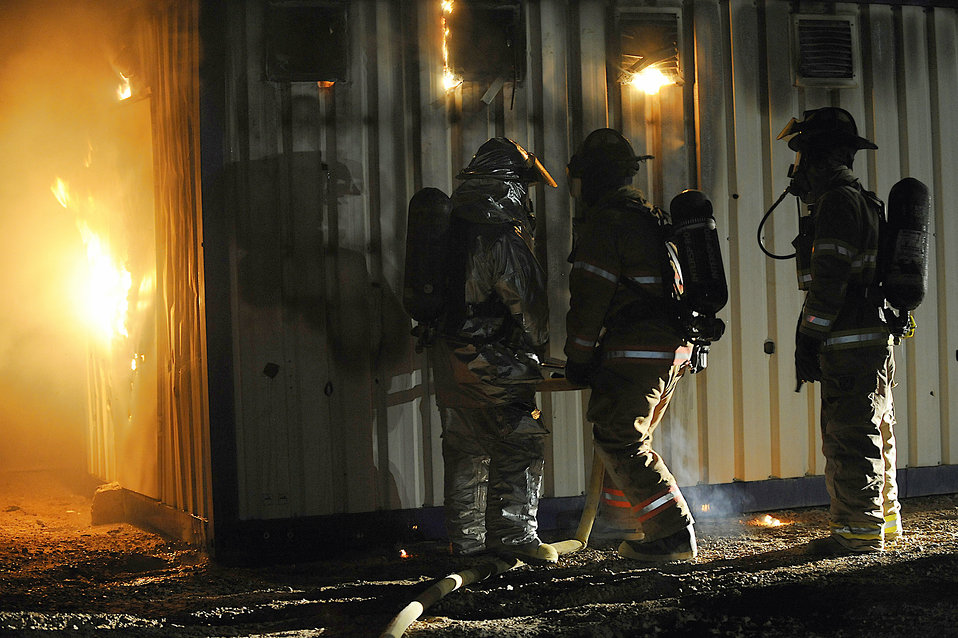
We didn't start the fire

Staff Sgt. Steven Wade, Staff Sgt. Kristopher Doughty, and Army Staff Sgt. Joshua Nordstrom use a piercing nozzle to extinguish flames during a live-fire training exercise Oct. 22 at Joint Base Balad, Iraq. The nozzle allows firefighters to work from outside the structure. All three servicemembers are assigned to the Joint Base Balad Fire Department, which conducted training to give firefighters experience using hose patterns on interior fires. Sergeant Wade is deployed from McConnell Air Force Base, Kan. Sergeant Doughty is deployed from Fairchild AFB, Wash.